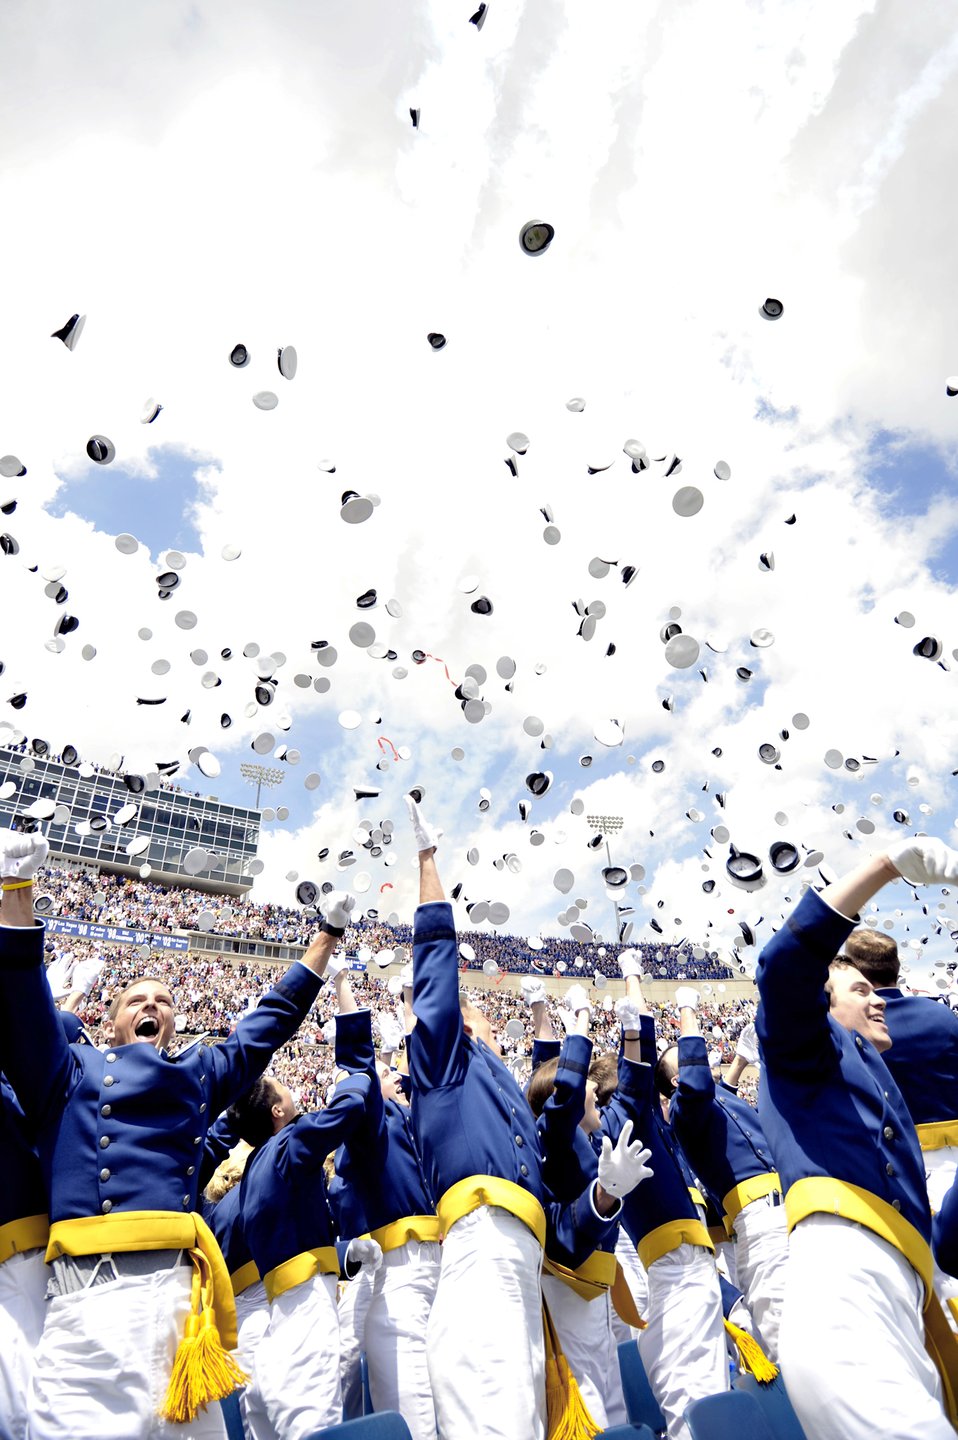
Joint Chiefs chairman delivers Academy commencement

The newly commissioned second lieutenants throw their hats as the Thunderbirds fly over during the class of 2010 graduation ceremonies May 26, 2010, at the U.S. Air Force Academy, Colo.